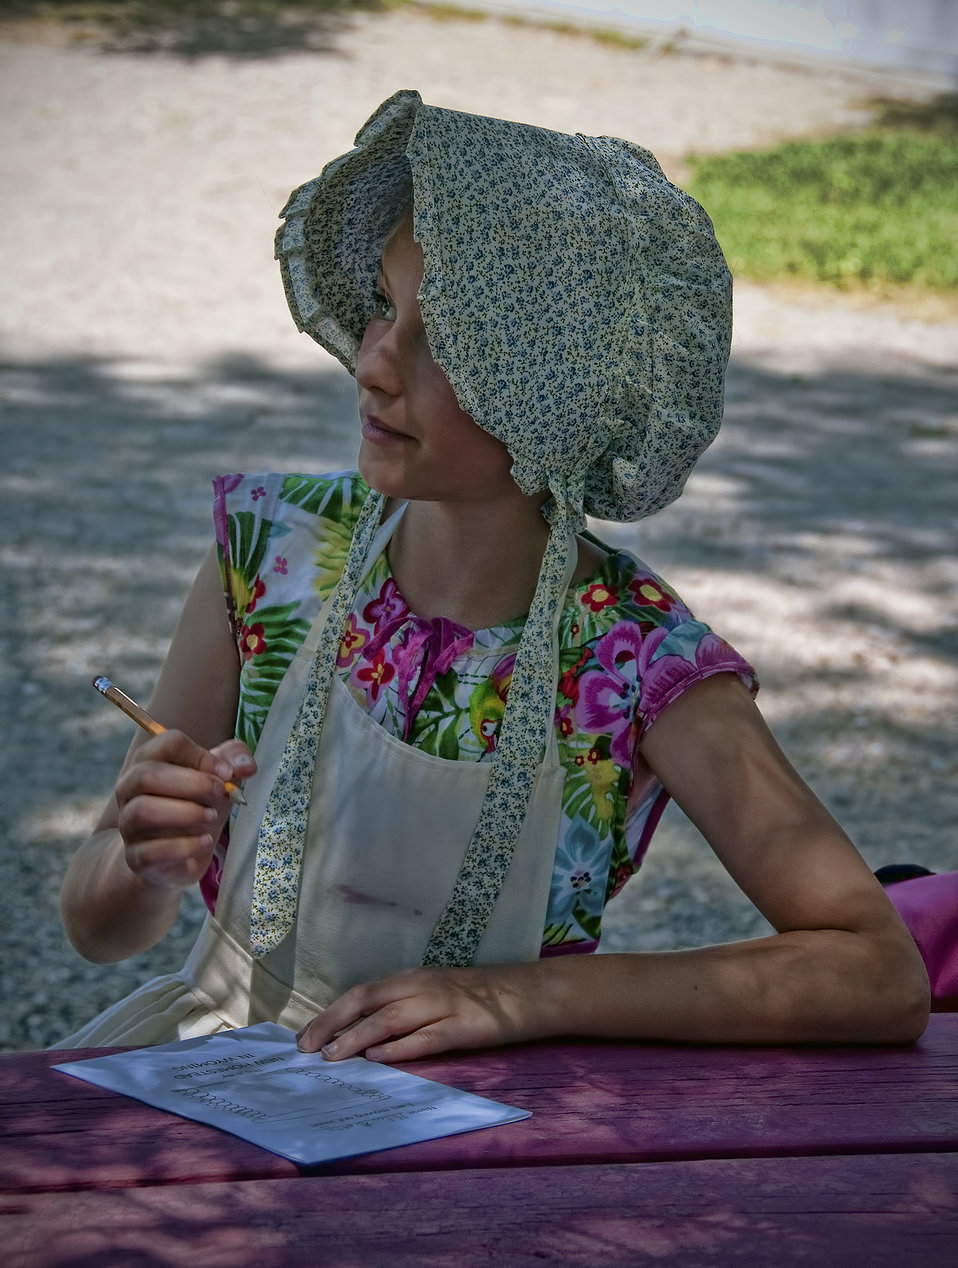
Dressed for Class

A summer camp participant, anticipating a history lesson as part of her field trip to the historic Miller House, came dressed in a bonnet and pinafore.

Credit: USFWS / BJ Baker, National Elk Refuge volunteer